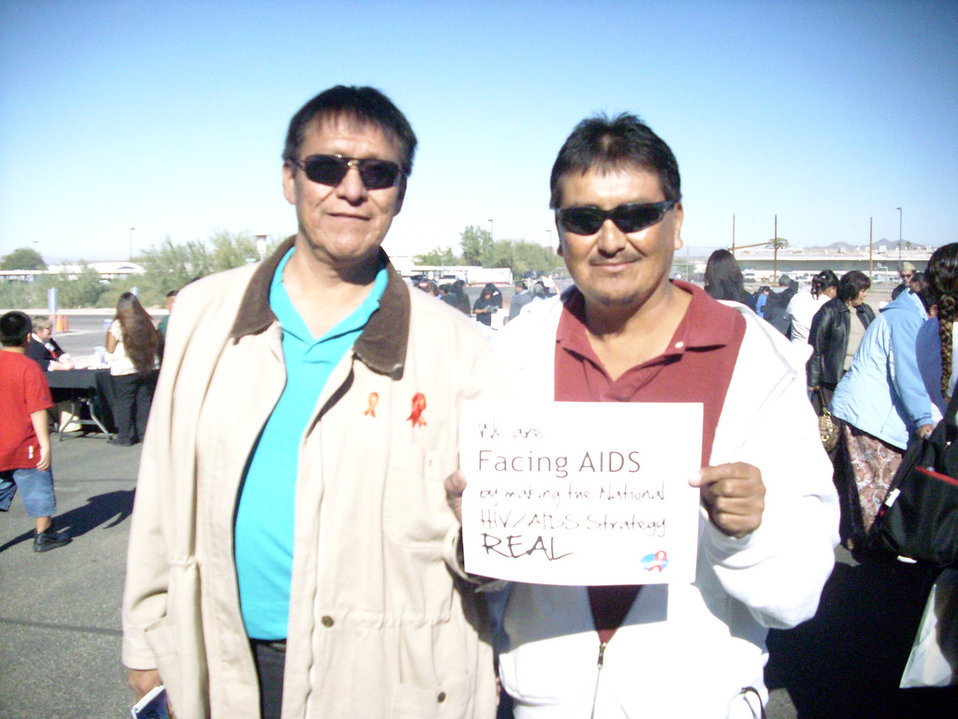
We are Facing AIDS through NHAS-25